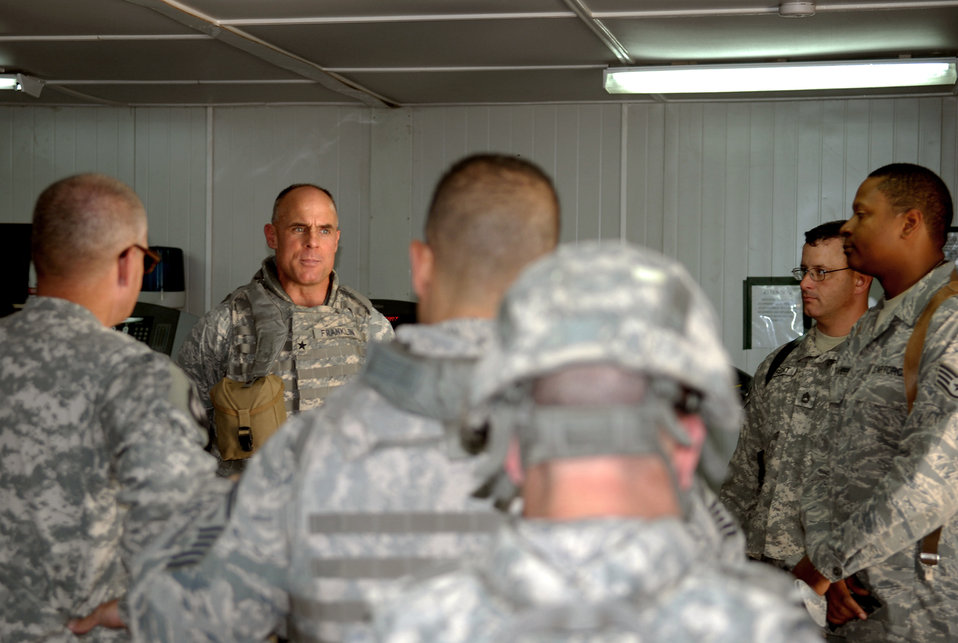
JET Airmen

Members of the 732nd Expeditionary Support Squadron Kalsu Provincial Reconstruction Team speak with Brig. Gen. Craig A. Franklin, May 14, 2010, at forward operating base Kalsu, Iraq, about the projects the PRT is taking on as U.S. forces draw down in Iraq. The PRT team is made up of joint expeditionary tasked Airmen, Army and State Department officials. General Franklin is the 332nd Air Expeditionary Wing commander.